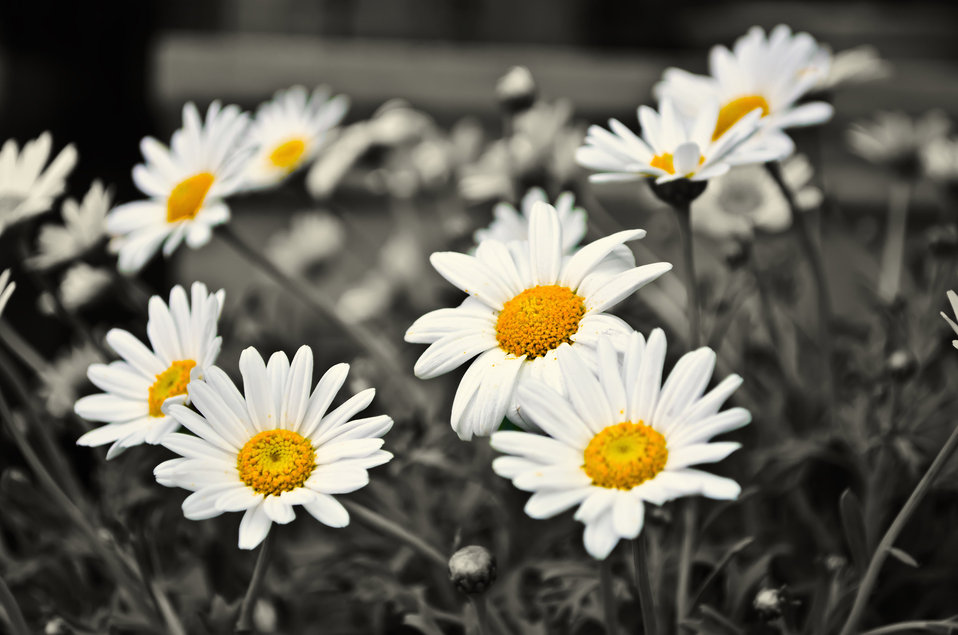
Nice flowers.